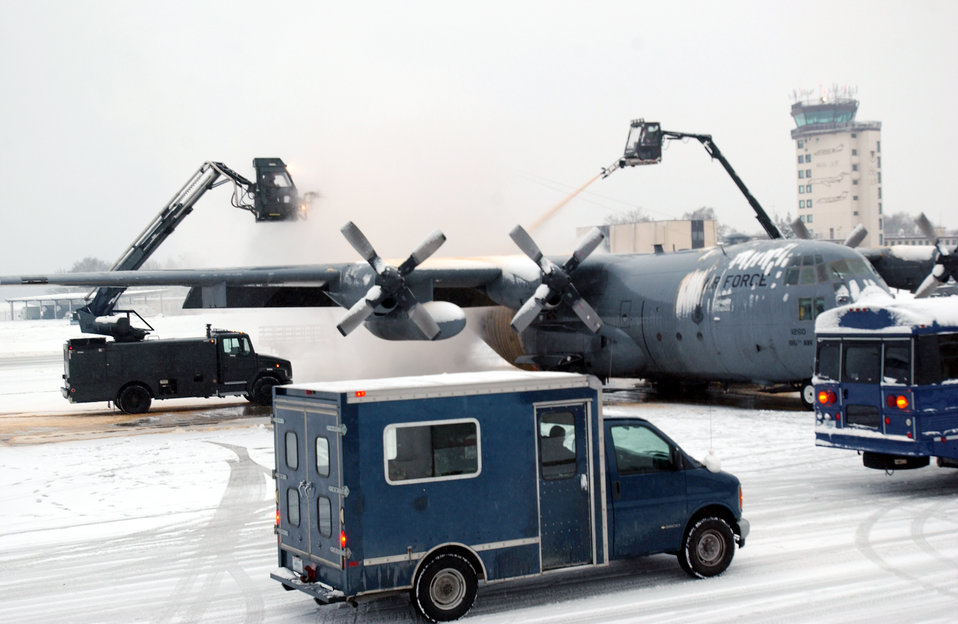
De-ice de-plane

RAMSTEIN AIR BASE, Germany -- Airmen from the 86th Aircraft Maintenance Squadron here de-ice a C-130 Hercules on Jan. 27 after a heavy snowfall the day before. The base received 3.5 inches of snow Jan. 26 and Air Force weather forecasters said more snow was on the way.